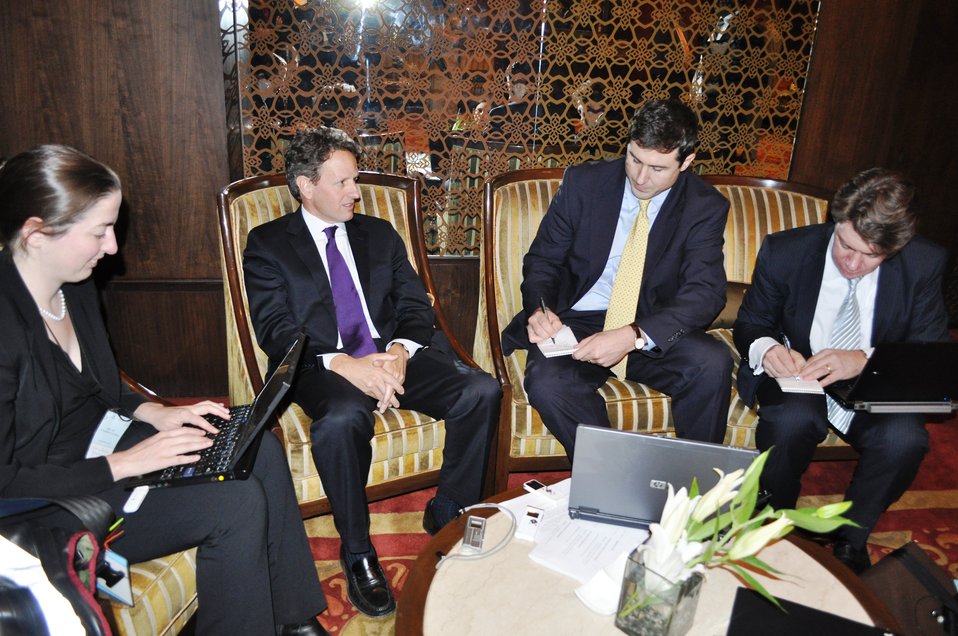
Geithner visit to Asia, November 4-12, 2010

Secretary Geithner takes a moment to talk with reporters in Delhi, India.